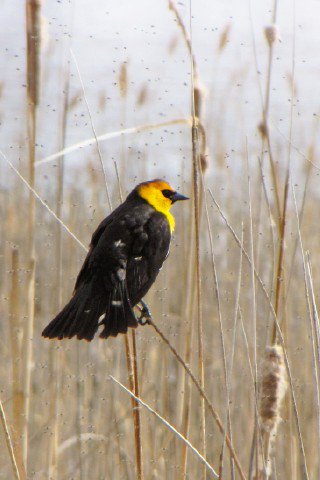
Yellow-headed Blackbird

A male Yellow-headed blackbird sits on cattail amid a swarm of midge.